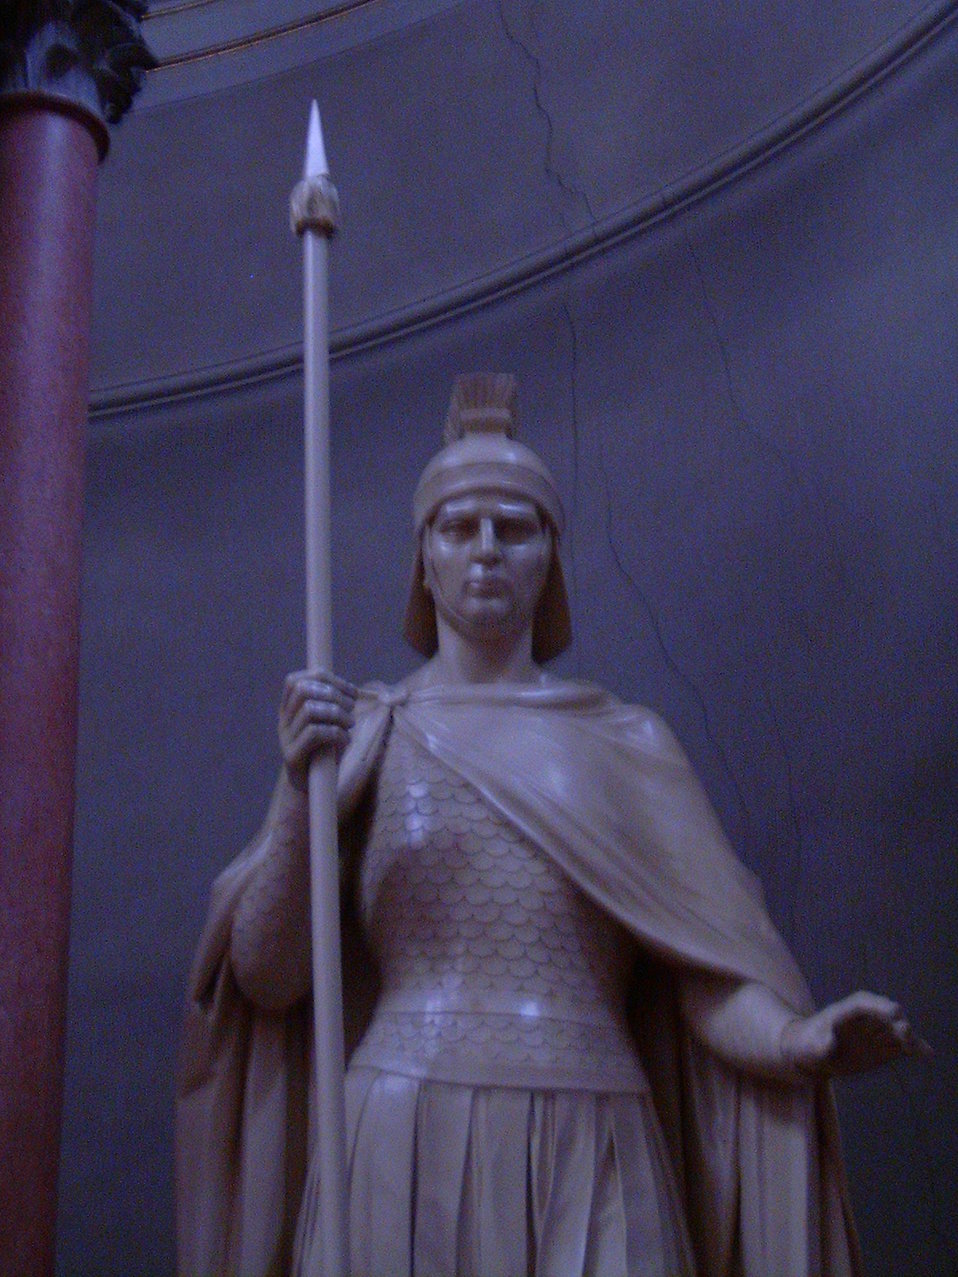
Italiano: La statua di S. Floriano.